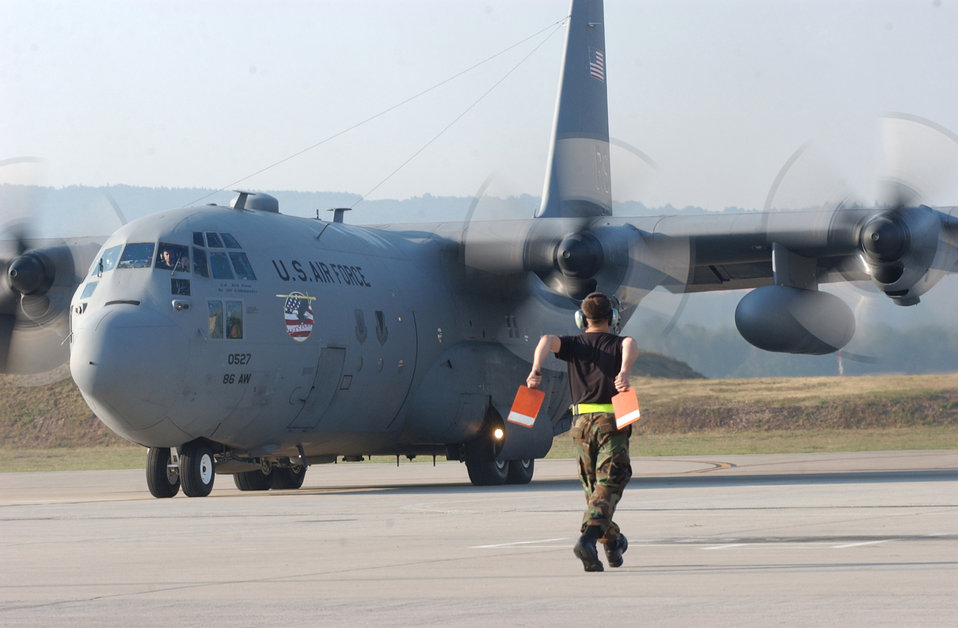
Ramstein planes, Airmen depart for Darfur mission

RAMSTEIN AIR BASE, Germany -- A C-130 Hercules from the 86th Airlift Wing is marshaled onto the taxiway here July 16 on its way to Kigali, Rwanda, for a monthlong airlift mission to the Darfur region of Sudan. Three C-130 aircraft and about 40 Airmen here will support NATO's response to support the African Union's expanded peacekeeping mission in Darfur with logistics and training.